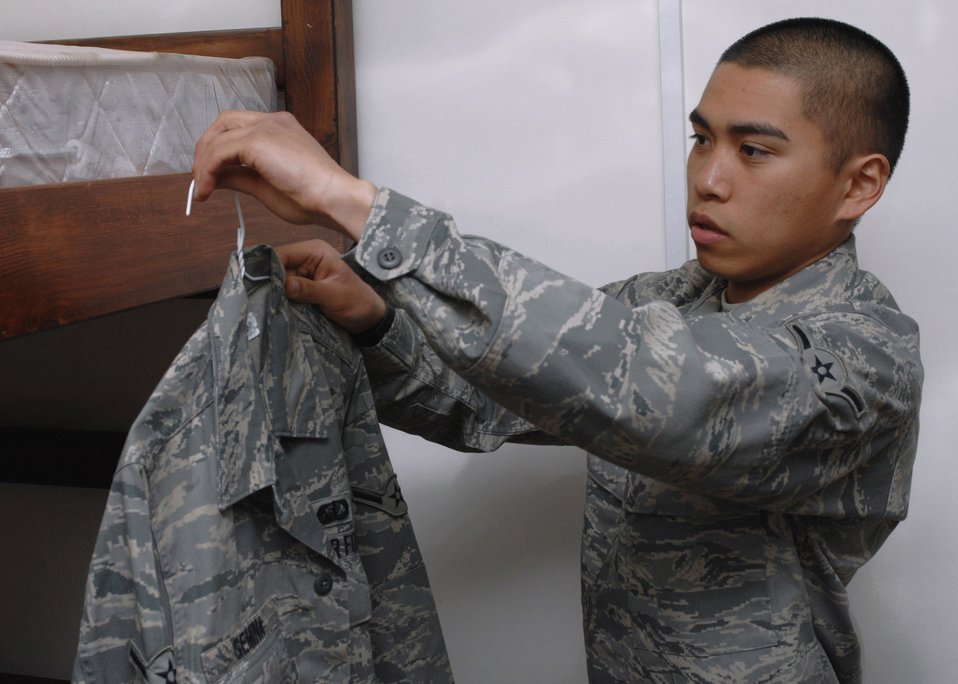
Bagram receives first relocatable dormitory

Airman Bryan Irving Gemina moves into his new room at the recently opened Texan Hall Feb. 26 on Camp Cunningham at Bagram Air Base, Afghanistan. Airman Gemina, whose home unit is 919th Services Flight at Duke Field, Fla., was one of 120 Airmen relocated to the new facility. Airman Gemina is assigned to the 455th Expeditionary Mission Support Group.